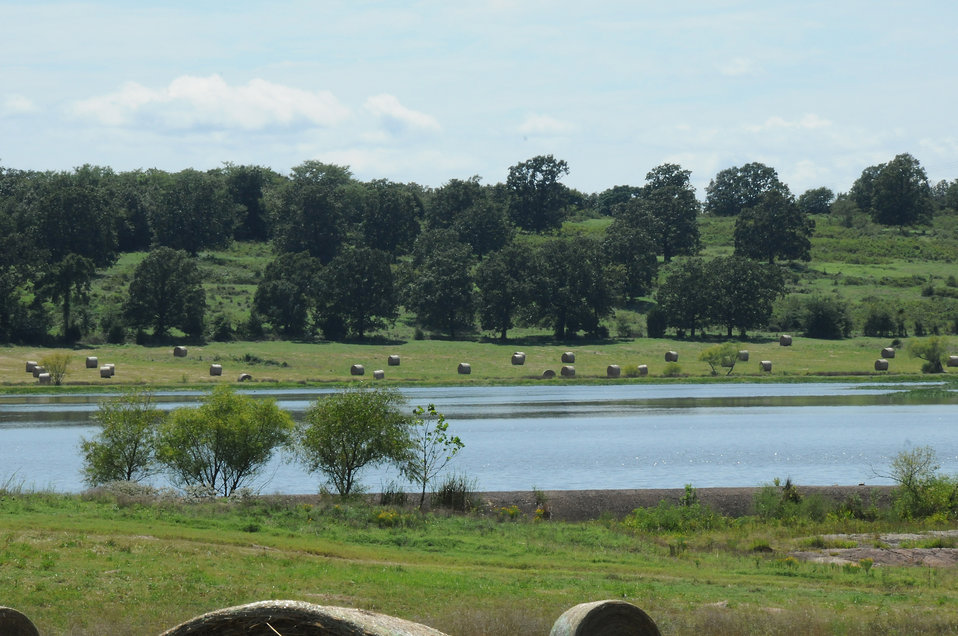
Baled hay waits for collection on a farm in Oklahoma on August 11, 2009.